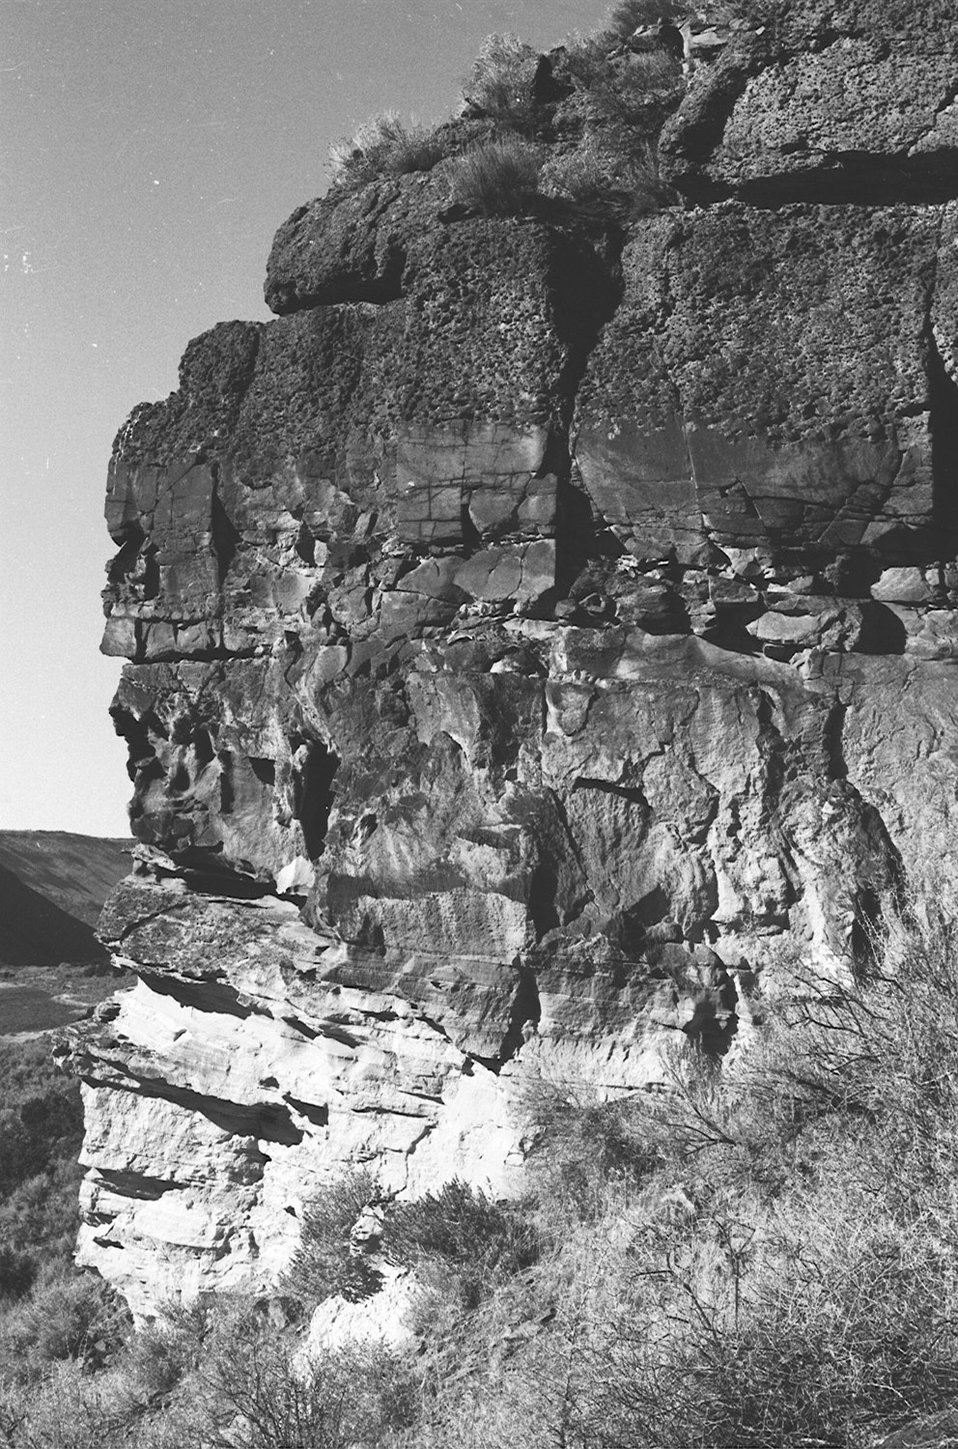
Ash Flow Burley Field Office USRD Upper Snake River District